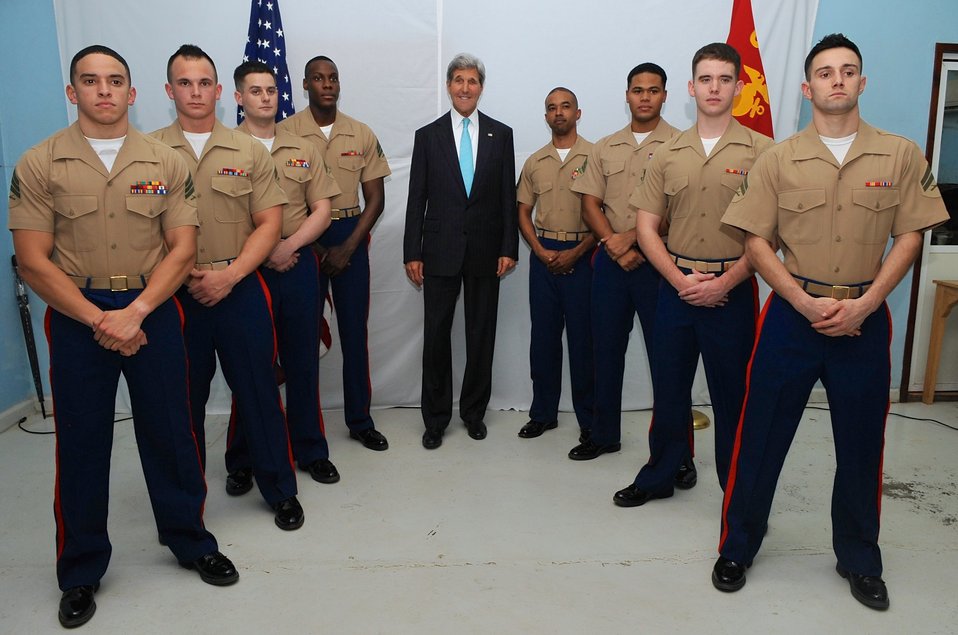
Secretary Kerry Poses With Marines Stationed at Embassy Juba

U.S. Marines who guard the U.S. Embassy in Juba, South Sudan, pose with U.S. Secretary of State John Kerry after he addressed workers at their compound in Juba on May 2, 2014.